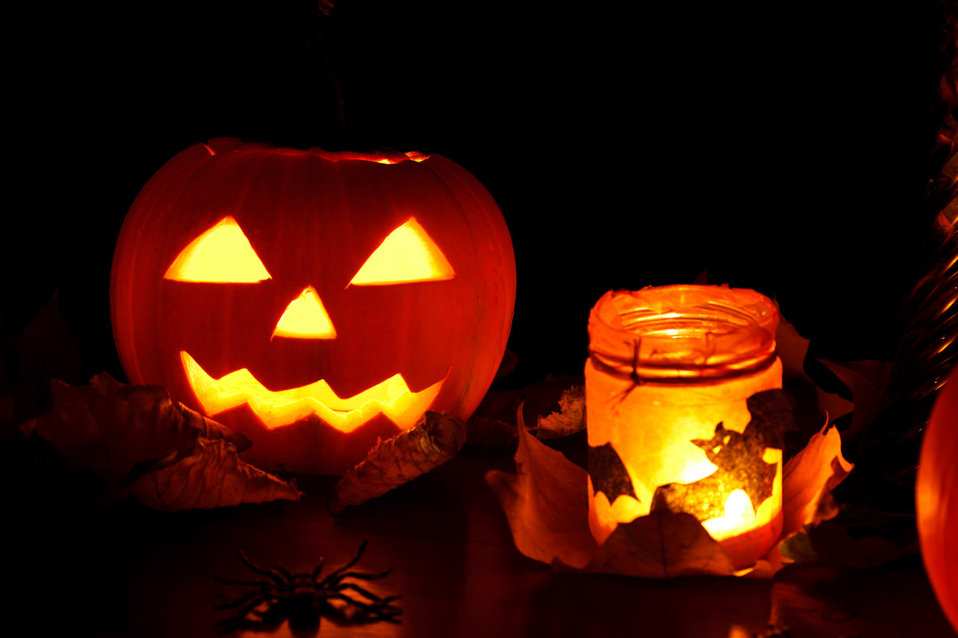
Jack-o-lantern and lights

Halloween pumpkin lantern with scary dark autumn decoration.